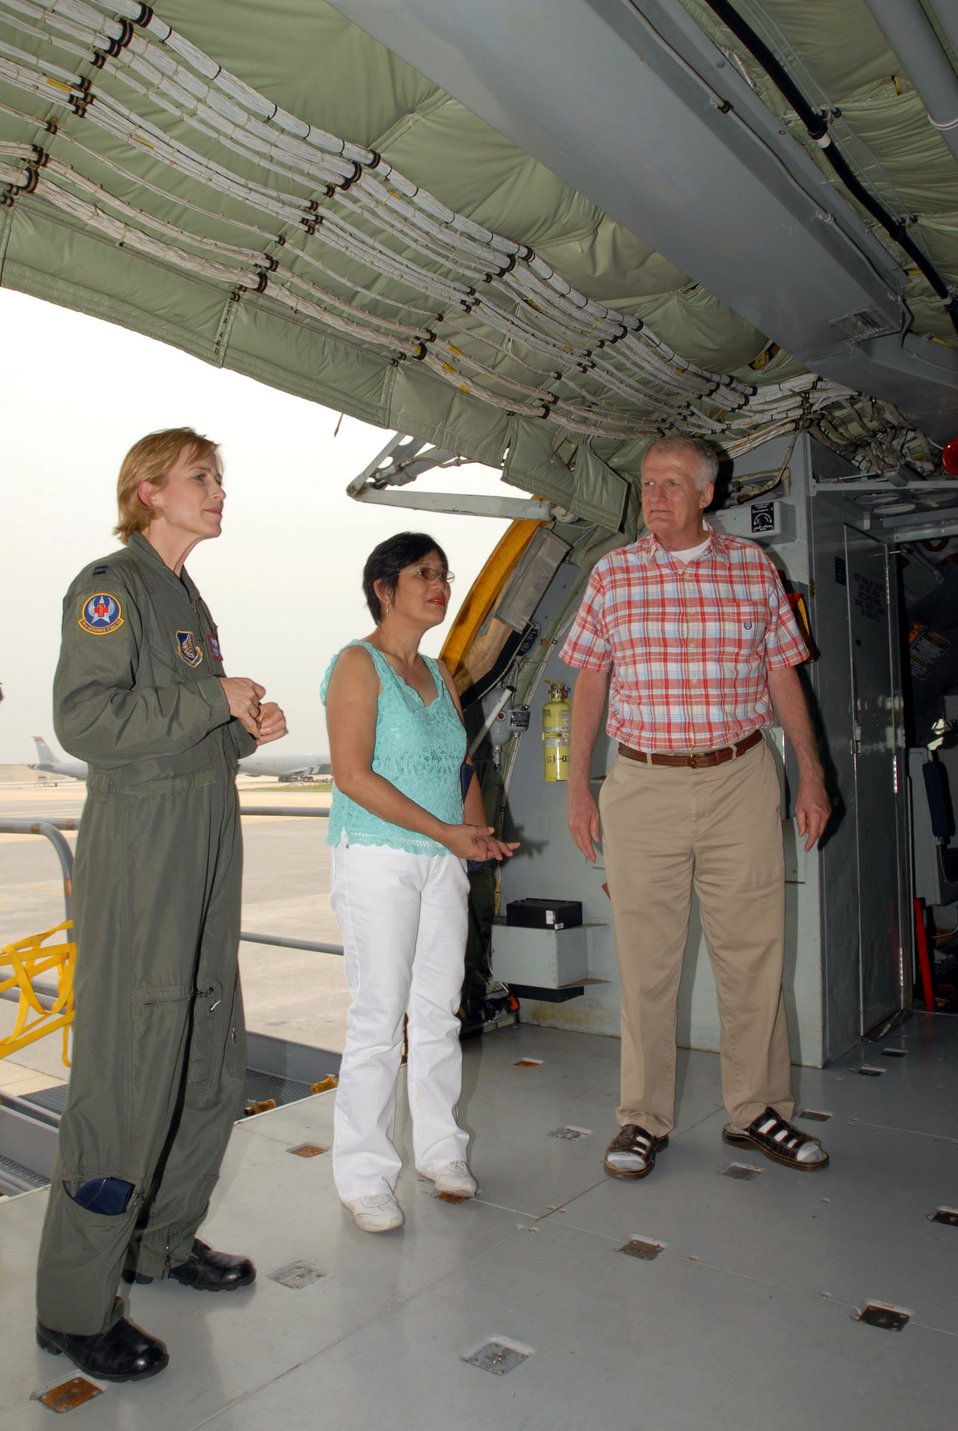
Kadena school teacher thanks his military medical heroes

Capt. Jeannette Ward (left) talks with Jim and Marite Brierly about where Mr. Brierly's medical evacuation litter was on a KC-135 Stratotanker May 2 at Kadena Air Base, Japan. Captain Ward was part of the team that treated and medically evacuated Mr. Brierly to Hawaii after he suffered a major heart attack March 30, 2006. Mr. and Mrs. Brierly visited the units to thank them for their efforts. Mr. Brierly is a English as a second language teacher at Kadena Elementary School here. Captain Ward is a flight nurse with the 18th Aeromedical Evacuation Squadron.